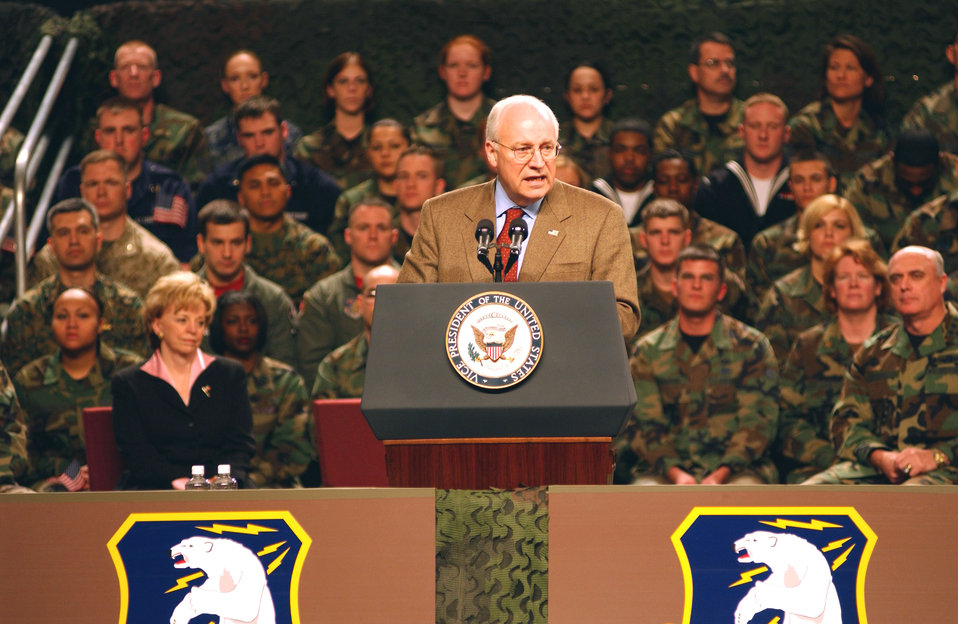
Vice President Cheney

ELMENDORF AIR FORCE BASE, Alaska -- Vice President Richard B. Cheney speaks to Airmen during his visit here April 9. Vice President Cheney visited the base before starting a tour of 11 Asian countries.